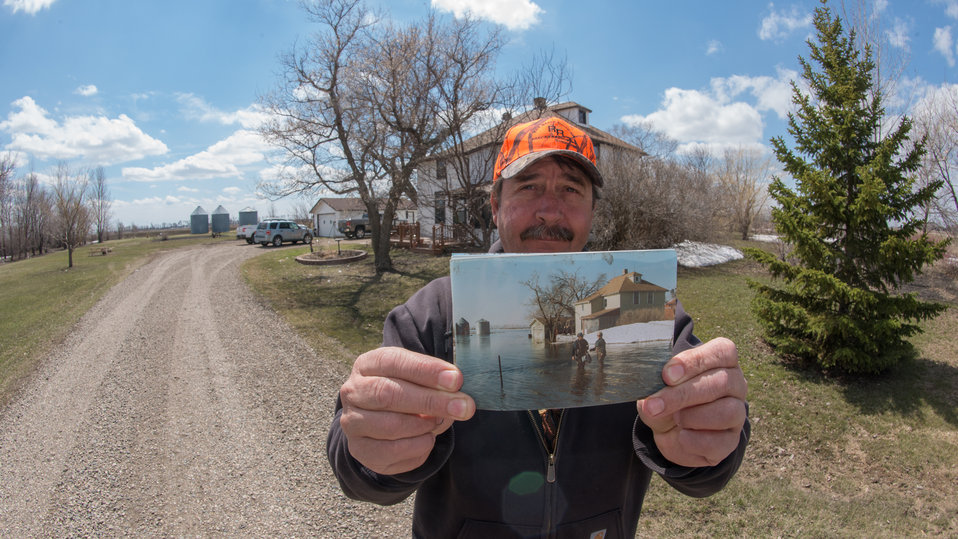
William Lisberg used the U.S. Department of Agriculture (USDA) Environmental Quality Incentives Program (EQIP) to receive an incentive payment to help in the cost of ring dike construction around his farmstead, to prevent the flooding seen in the photograph he holds, in front of his farmstead, in Cass County, ND, on Tuesday, April 30, 2013. A week ago, the farmstead was covered in snow. Now thawed, the water fills the drainages.